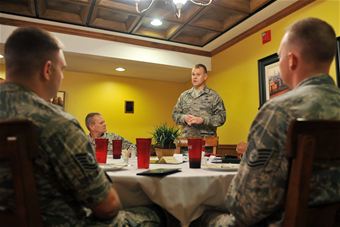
CMSAF visits Offutt

Chief Master Sgt. of the Air Force James Roy speaks with Airmen during a luncheon at Offutt Air Force Base, Neb., Aug. 19, 2011. Roy met with enlisted Airmen to discuss various topics and address their concerns.